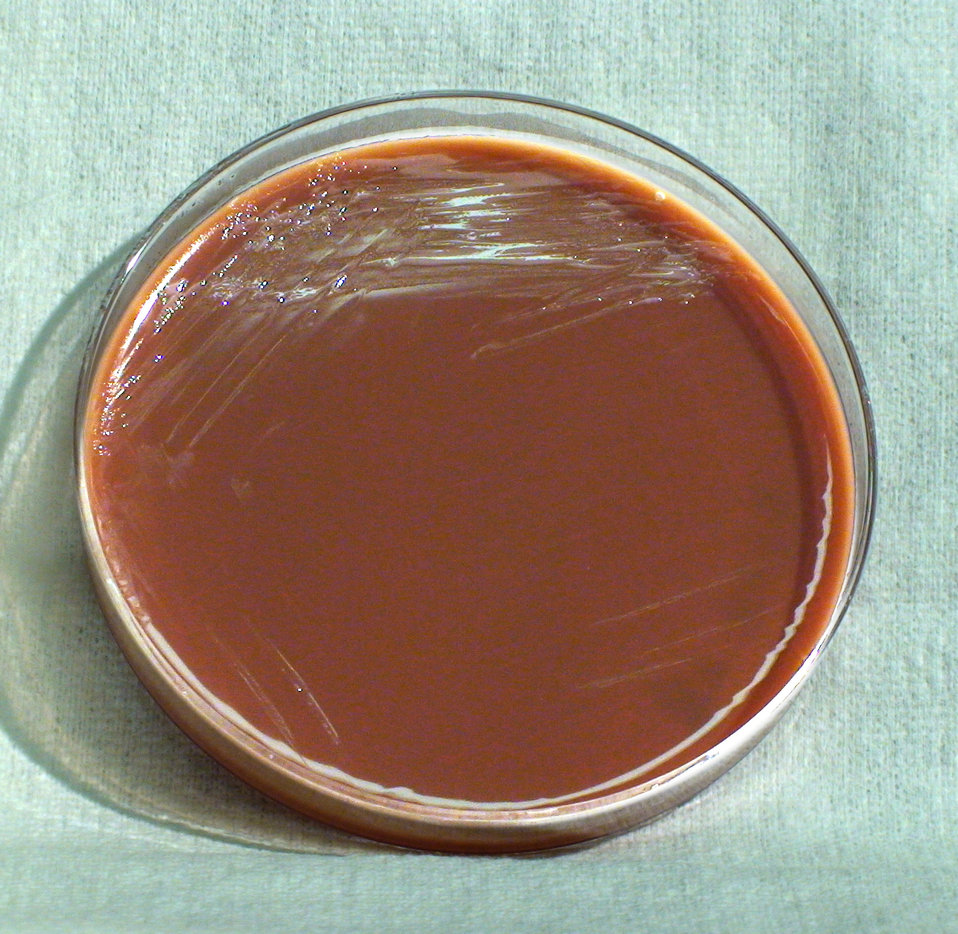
This photograph depicts the colonial morphology displayed by Gram-negative Brucella suis bacteria, which was grown on a medium of chocolate agar, for a 48 hour time period, at a temperature of 37�C. Note that PHIL 12477 is an closer view of these bacterial colonies. See PHIL 12475, for a view of these bacteria grown on the same medium and temperature, but for half the time period (24hr). Also note PHIL 12478 and 12479, again depicting B. suis organisms, which were grown on both the same medium and temperature, but for a greater time period (72hr). Brucella spp. bacteria are pathogenic towards humans, and cause a disease known as brucellosis.